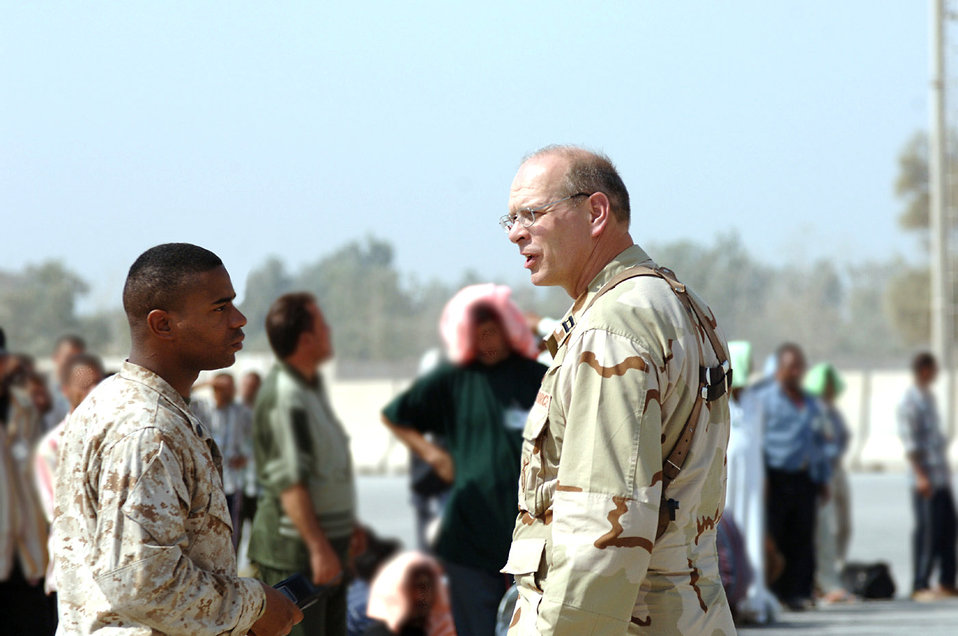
Voting time

SATHER AIR BASE, Iraq - Marine Staff Sgt. Shawn Baker (left) discusses force protection issues with Capt. Michael Kandoll during the transportation of Iraqi poll workers to aircraft that would take them to their polling stations. The sergeant is with the 2nd Marine Expeditionary Force headquarters group. The captain is the 447th Air Expeditionary Group force protection officer here.